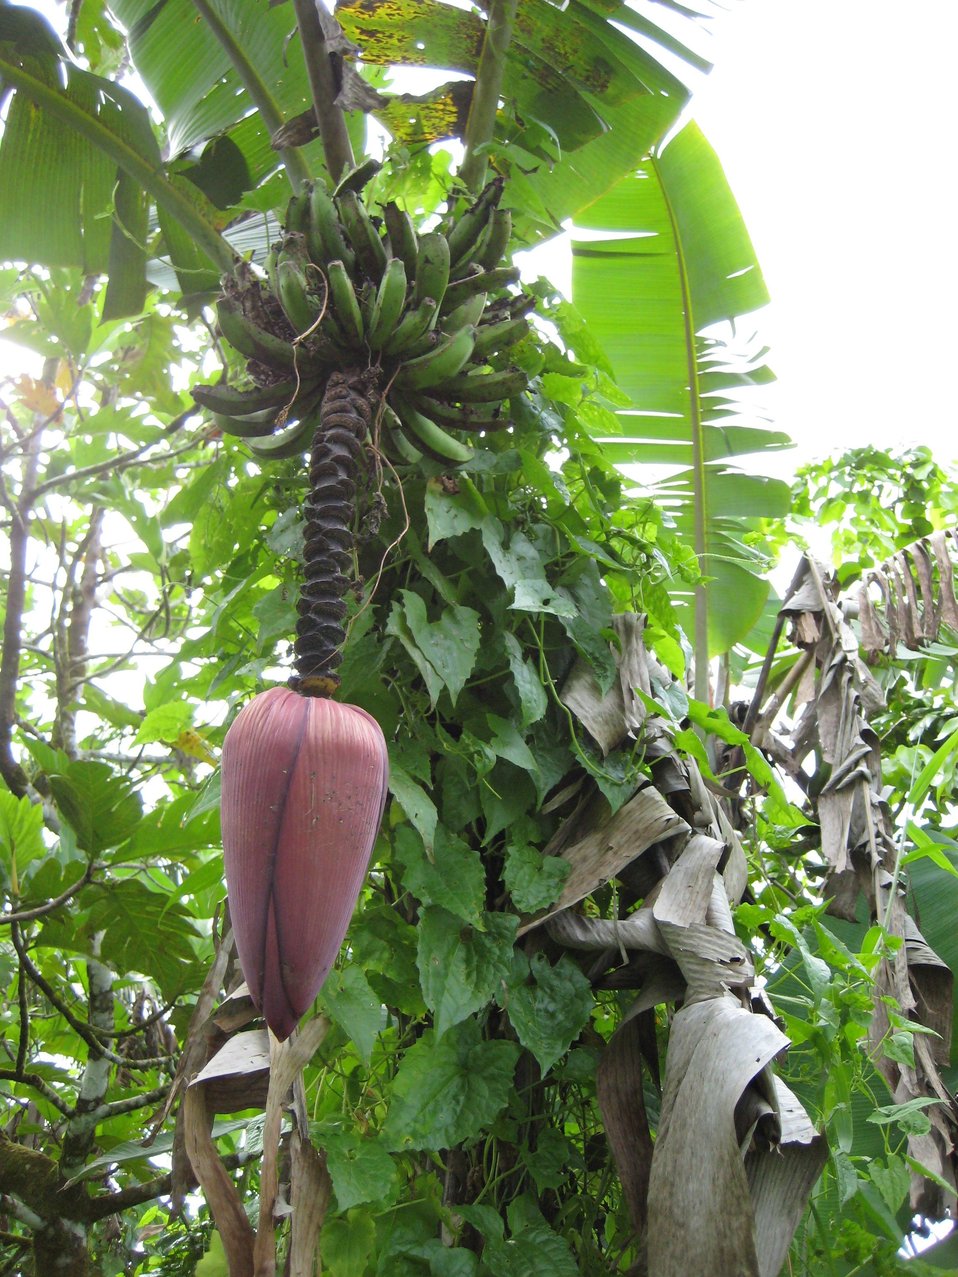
Banana tree with paradisiaca flower.